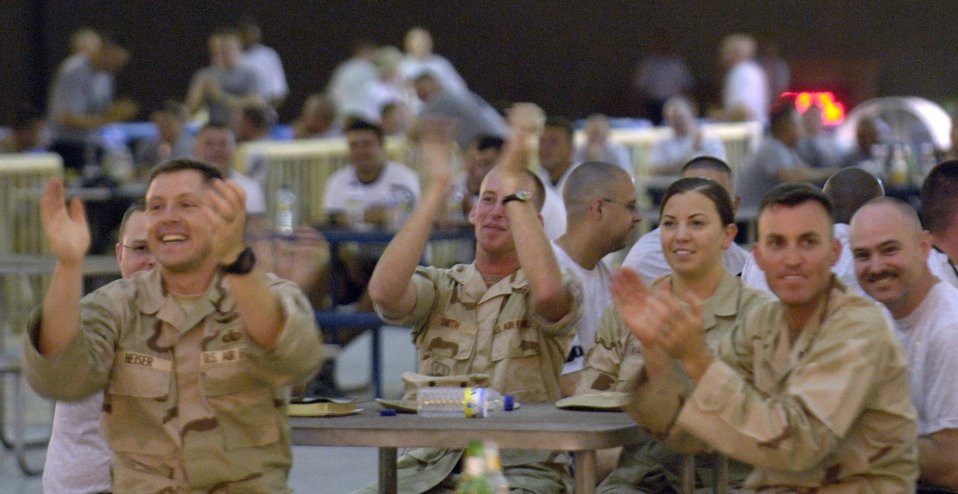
Expeditionary band performs for troops in Southwest Asia

The crowd goes wild during the debut of the U.S. Central Air Forces Expeditionary Bands under their new names